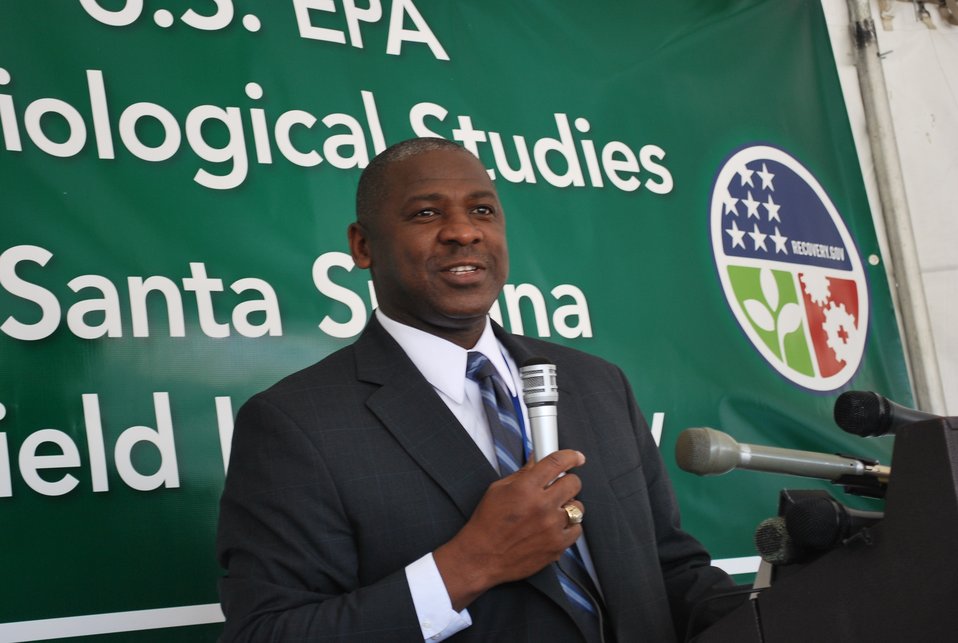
Santa Susana Field Laboratory (SSFL) Field Office Opening Ceremony

The DOE Office of Environmental Management Recovery Act Deputy Director Thomas Johnson spoke during the opening ceremony for the new Environmental Protection Agency Santa Susana Field Laboratory (SSFL) Field Office in Canoga Park, Calif. The DOE provided $38 million in Recovery Act funds to the EPA to conduct a radiological characterization study of portions of SSFL where the Atomic Energy Commission conducted research.